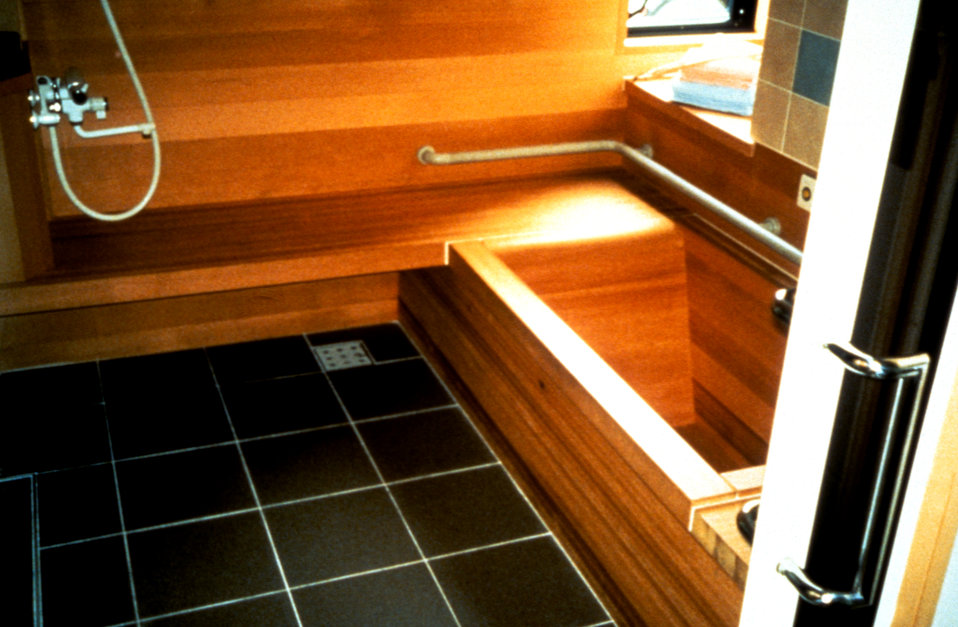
This 1995 image depicted a example of a Japanese-styled bathroom, in which several bathing fixtures have been combined into a single small space, which could be used in three major ways: as a tub in which to soak; as a shower bench on which to sit; and as a curbless wet area into which one who uses a wheelchair could roll. The space could accommodate people of vastly different degrees of mobility without the need for further modification. This design also showed that the inclusion of such accommodating features need not detract from the design's aesthetic appeal, and actually could prove to enhance the look and feel of such an environment.